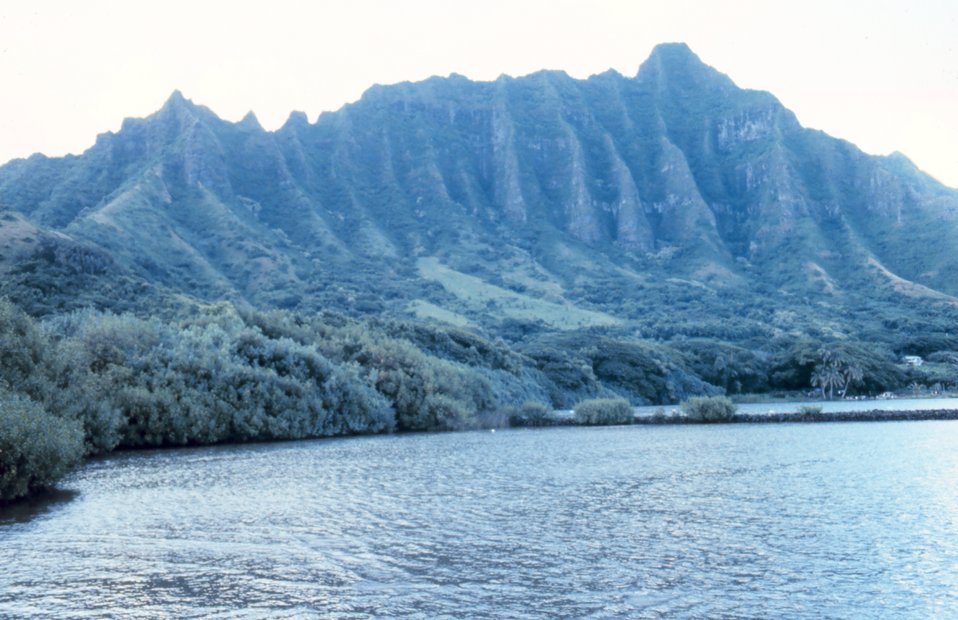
Kaneohe Bay looking to the north.